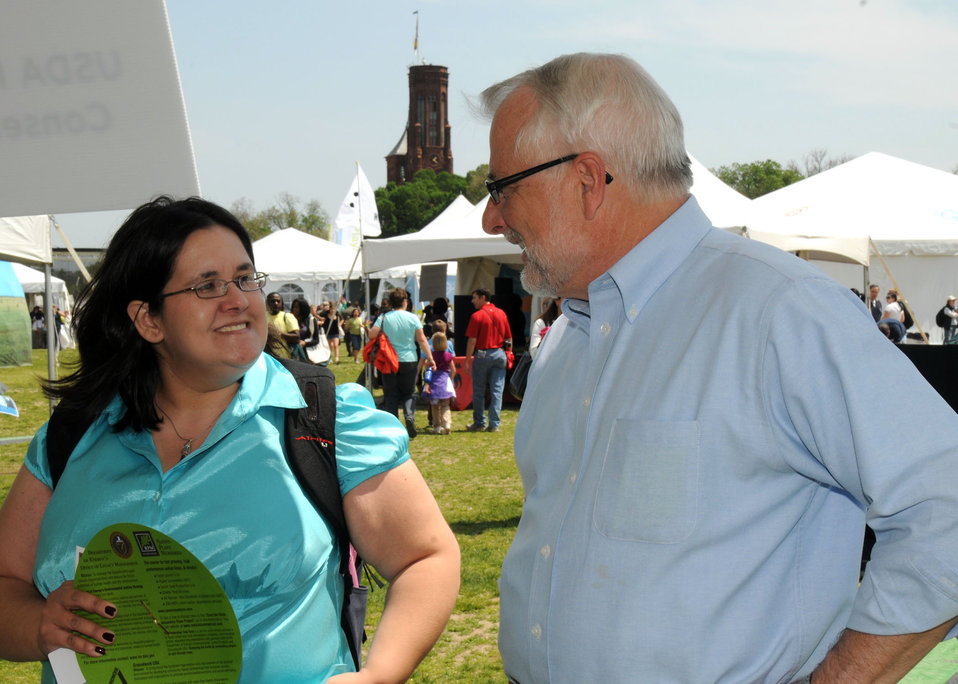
Natural Resources and Conservation Services (NRCS) Chief Dave White talks to a visitor at the NRCS exhibit on the Mall in Washington, D. C. on Earth Day, April 22, 2010. USDA photo 10di1326-08